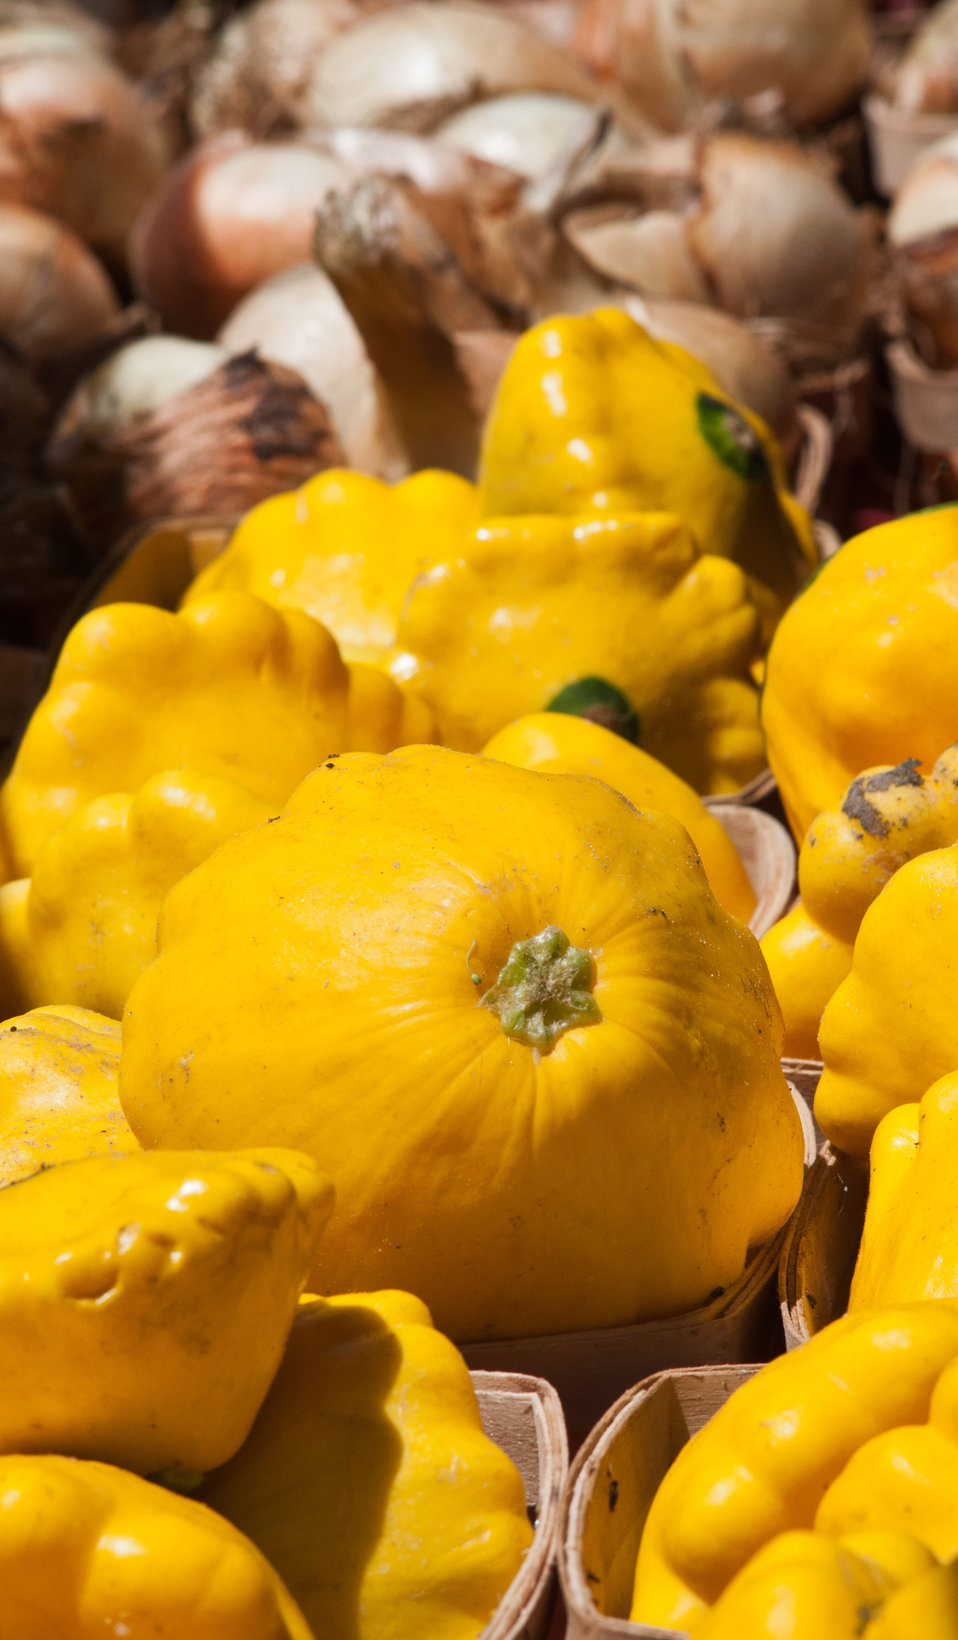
Worden Farm (www.wordenfarm.com) fresh picked organic squash are ready for sale at the Saturday Morning Market, in St. Petersburg, FL, on April 14, 2012. Worden Farm is a family farm that provides certified organic produce to Southwest Florida through community supported agriculture (CSA) membership programs and retail sale at several farmer’s (community) markets. Chris Worden, Ph.D. and Eva Worden, Ph.D. founded and operates the farm that employs more than 20 people. Growing certified organic crops in the coastal sandy soil has required them to develop innovative farming techniques which help the farm as well as assist the studies of universities and farm industry. There are several Worden Farm apprenticeships that provide hands-on training in all aspects of the farm, to include direct marketing at the Saturday Morning Market, or other market sites. The farm also holds culinary and gardening workshops, and other interactive educational events. One of their organic certifications is from the U.S. Department of Agriculture (USDA) and they have partnered with the USDA Natural Resources Conservation Service (NRCS) for soil conserving windbreaks and long tunnel structures to nurture seedlings and extend the growing season.